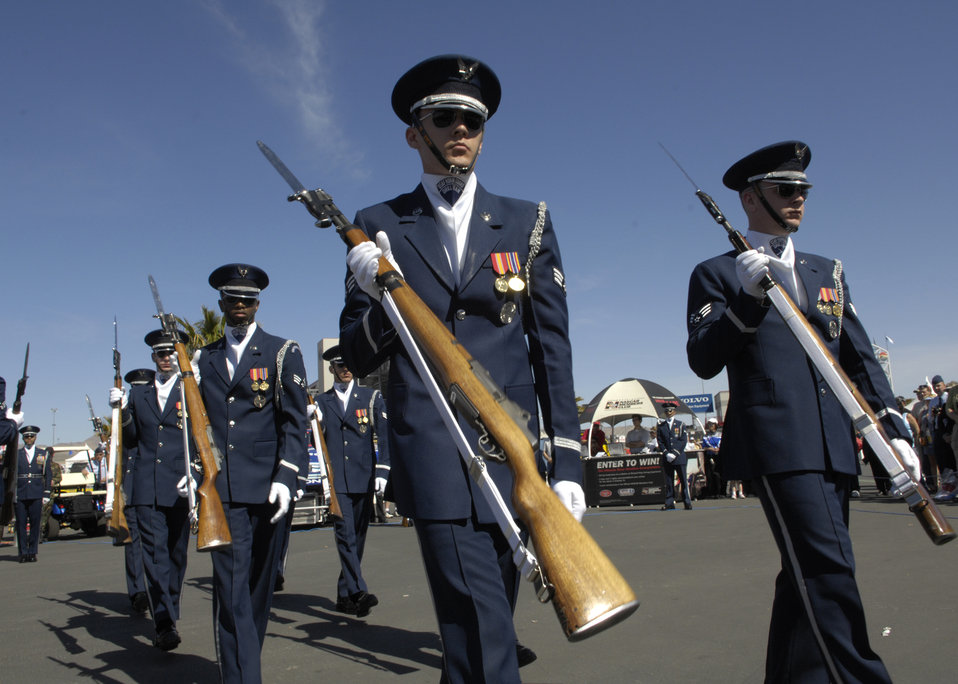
Drill Team performs at Busch Series Race

The United States Air Force Honor Guard Drill Team performs at the Las Vegas Motor Speedway, Las Vegas, Nev., March 10, 2007. The Drill Team is the traveling component of the Air Force Honor Guard and tours Air Force bases world wide showcasing the precision of today's Air Force to recruit, retain, and inspire Airmen for the Air Force mission.